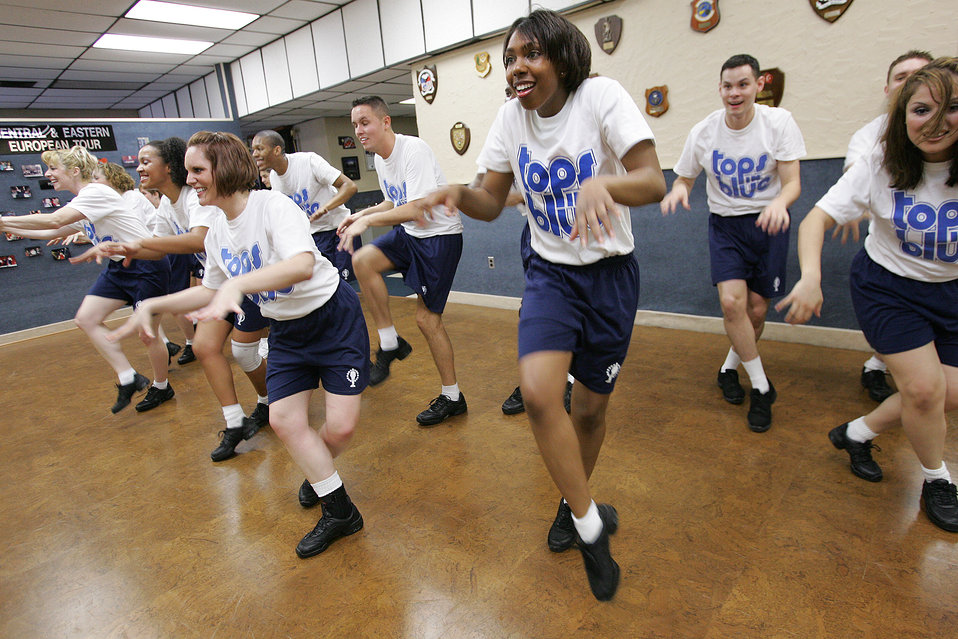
Tops In Blue 2007 rehearses for anniversary season

Tops in Blue 2007 cast members rehearse in their production center Feb. 7 at Lackland Air Force Base, Texas. This year's theme is